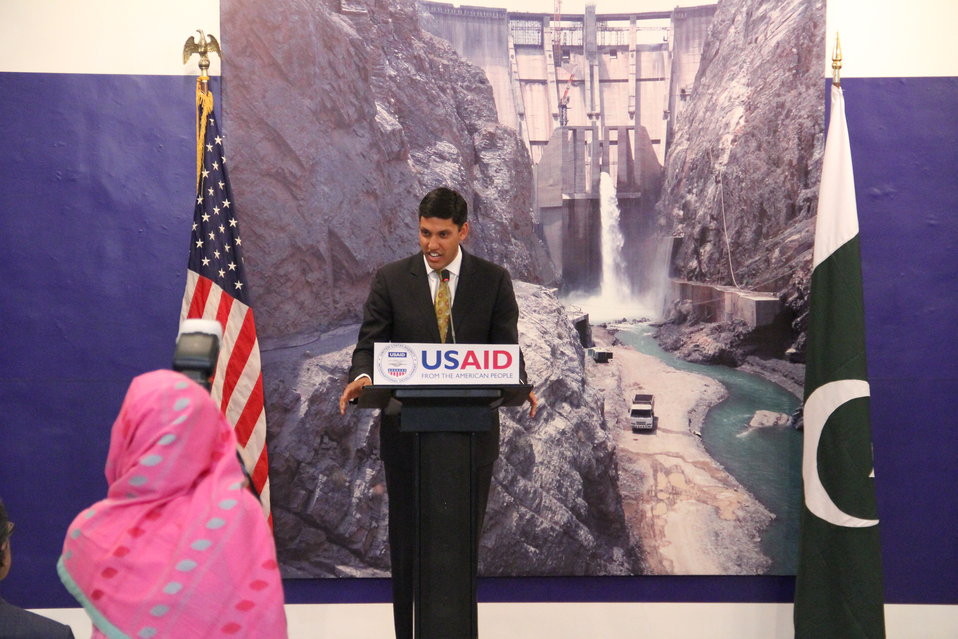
Photo Exhibition Celebrate US-PAK Cooperation at PNCA, Islamabad on April 13, 2012

Dr. Rajiv Shah, Administrator for USAID addressing the media